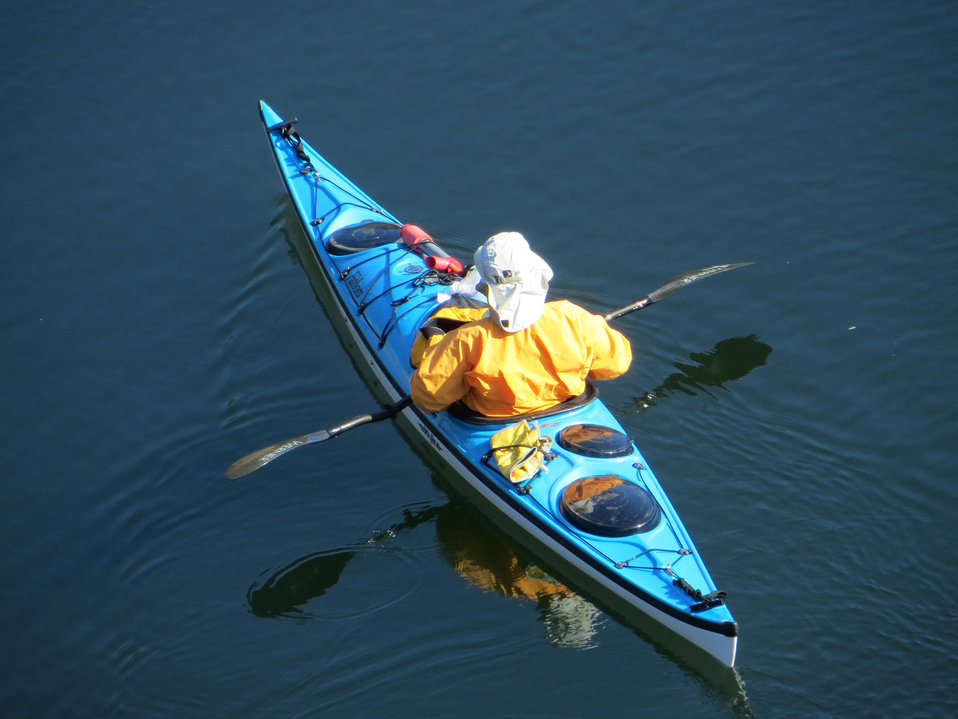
Blue kayak 1070

Blue kayak seen from above, dark river, bright colors.